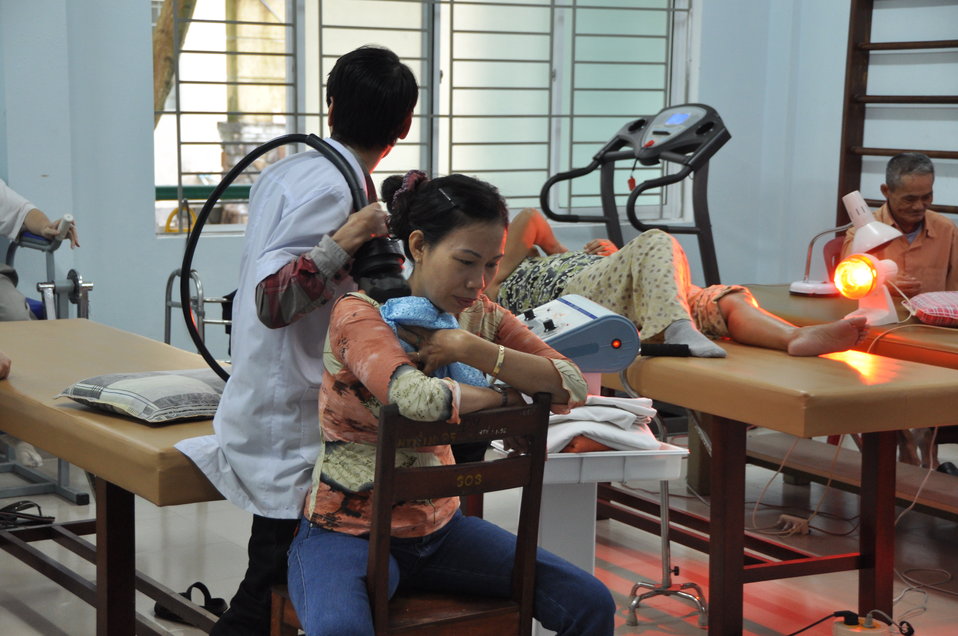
USAID support to Thanh Khe District Hospital

USAID-supported equipment and training help the staff at Thanh Khe District Hospital to meet the physical therapy needs of the disabled population of Danang.